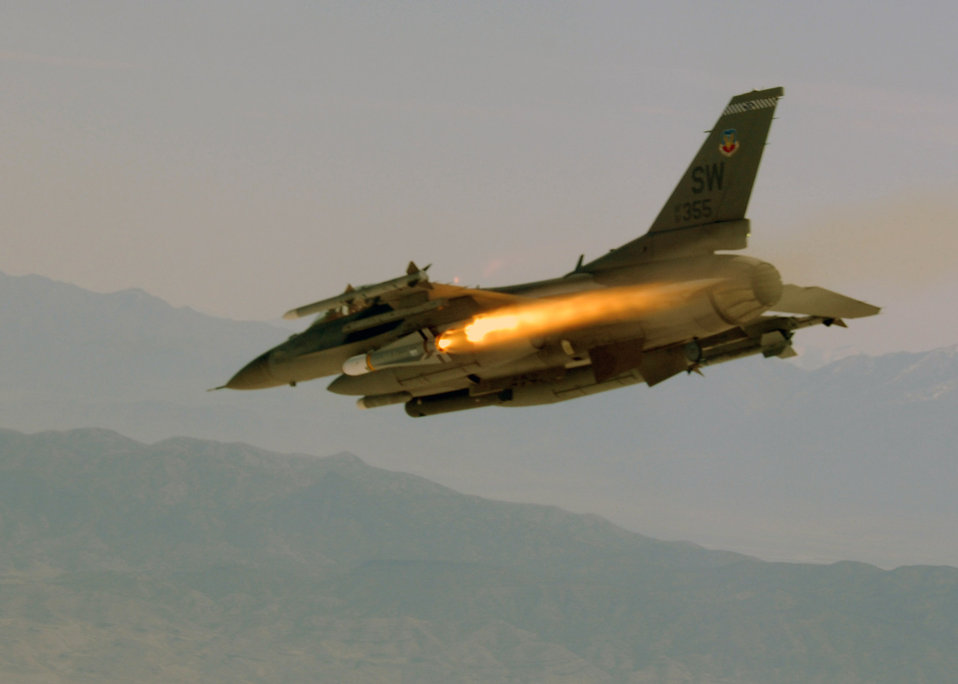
Laying down the 'hammer'

An F-16 Fighting Falcon from the 55th Fighter Squadron at Shaw Air Force Base, S.C., fires an AGM-65 Maverick at a ground target during Combat Hammer, a large-scale evaluation at Hill Air Force Base, Utah. The two-week exercise assesses operational effectiveness and suitability of weapons and weapons systems.